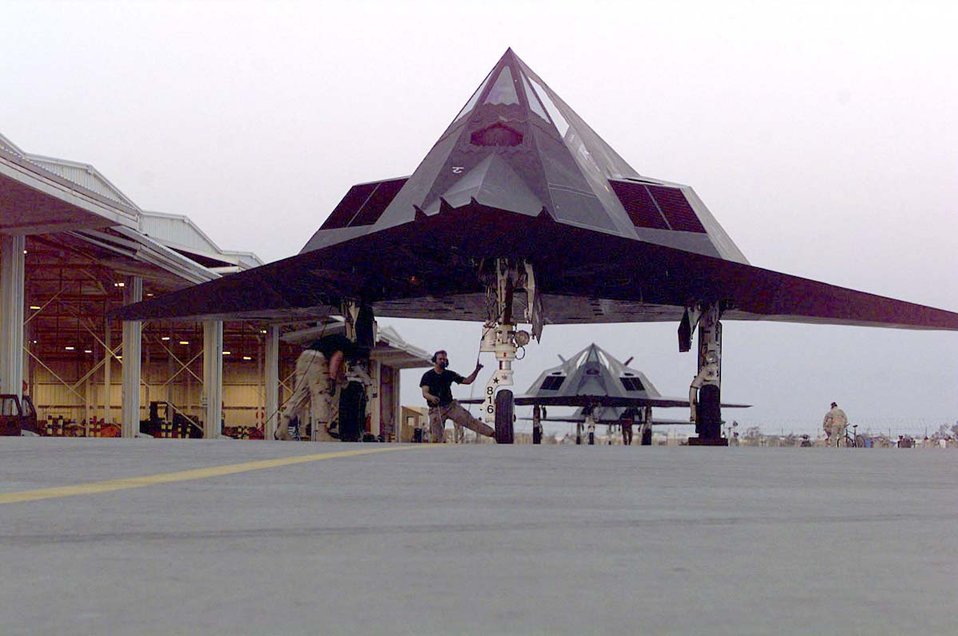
Deployed

AL JABER AIR BASE, Kuwait -- Several F-117 Nighthawks belonging to the 8th Fighter Squadron, 49th Fighter Wing, Holloman Air Force Base, N. M., hold for takeoff on March 13, 1998. The 8th FS is deployed here in support of the Southwest Asia buildup.